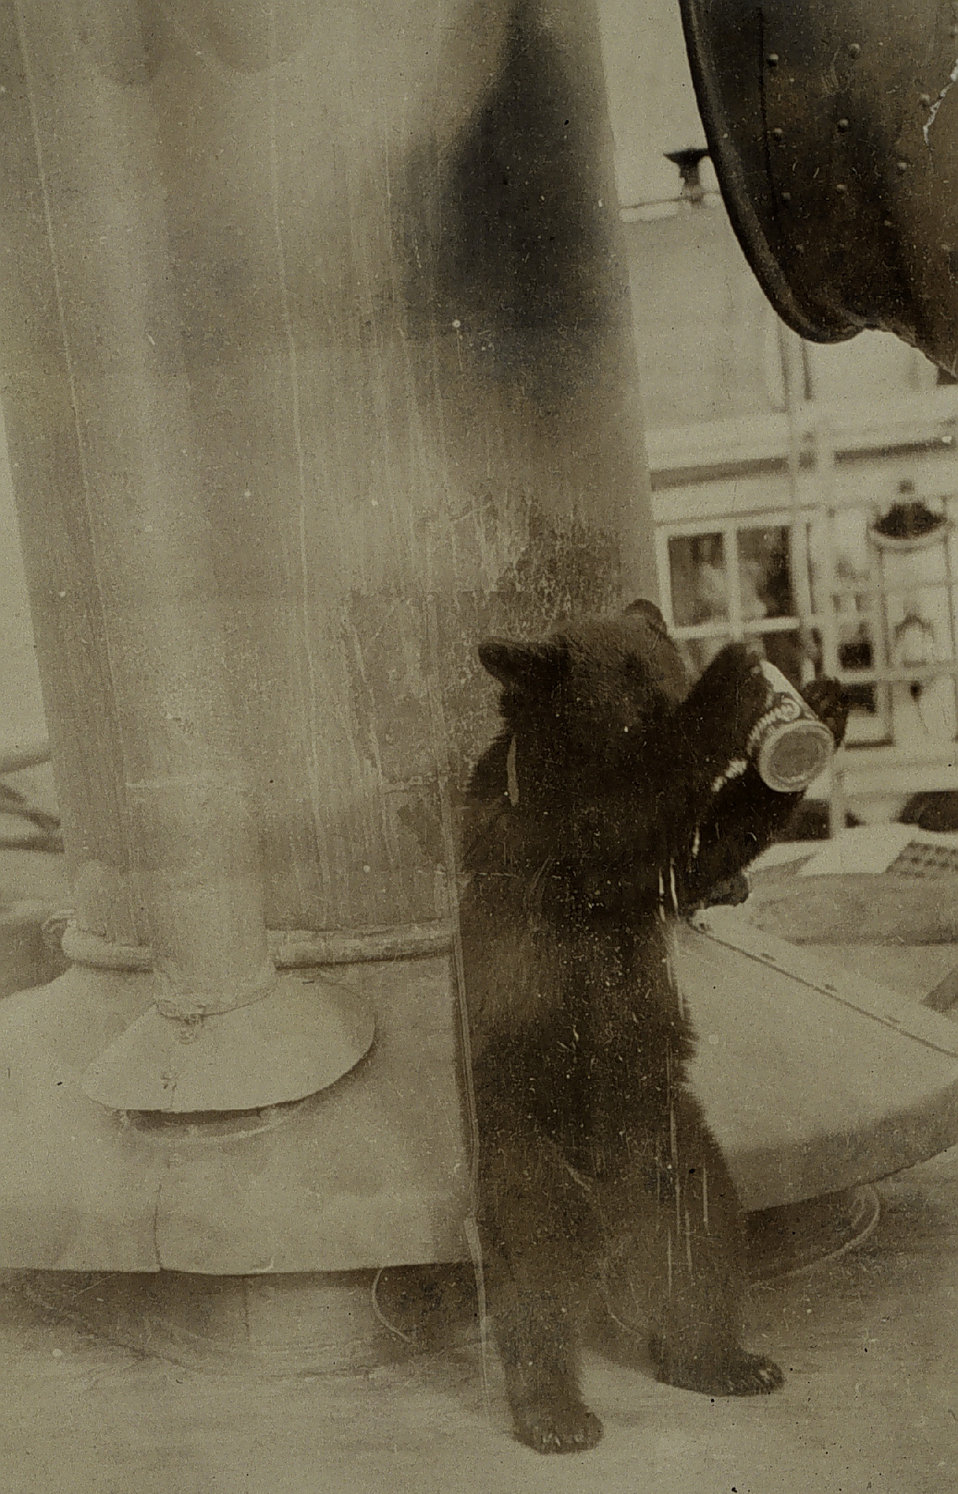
Billy making a mess - boy that stuff takes good.